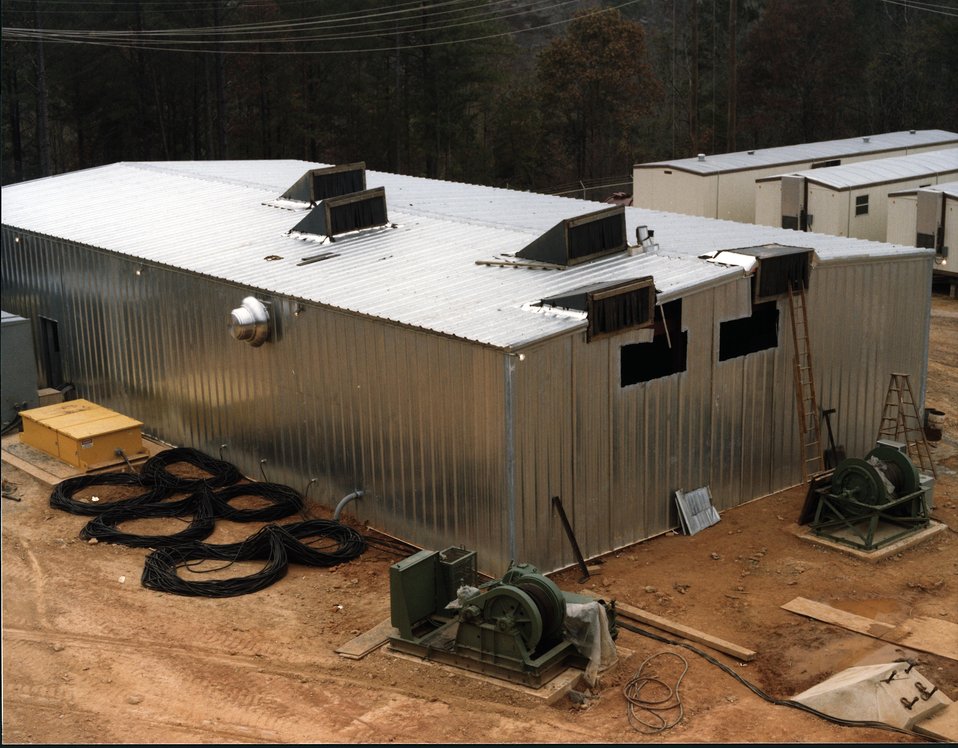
TWO HOISTS, PARTIALLY ASSEMBLED, FOR POWER AND SIGNAL CABLES ARE IN THE FOREGROUND.

THE BLIND SHAFT BORER SYSTEM IS A NEW CONCEPT FOR BORING VERTICAL COAL MINE SHAFTS. THE BORER MACHINE IS UNIQUE AS IT IS THE ONLY ONE OF ITS TYPE AND SIZE IN THE WORLD, AND IS EXPECTED TO SIGNIFICANTLY REDUCE THE TIME REQUIRED TO DEVELOP NEW COAL MINES. THE MACHINE IS OVER 24 FEET IN DIAMETER, NEARLY 60 FEET HIGH, WEIGHS 350 TONS, AND CAN BORE 40 FEET PER 24-HOUR DAY. THE TOTAL SYSTEM INCORPORATES CONVENTIONAL HOISTING AND CONCRETE LINING EQUIPMENT. THE INITIAL FIELD TRIAL IS AT U.S. STEEL'S OAK GROVE MINE, AND TESTING STARTED IN EARLY DECEMBER AND WILL CONTINUE INTO THE SPRING OF 1979.